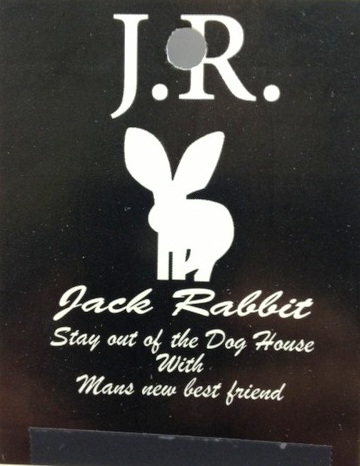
RECALLED – Jack Rabbit

August 12, 2013 – Product Recall – Jack Rabbit Inc. Conducts Voluntary Nationwide Recall of Lot 2510 of Jack Rabbit Dietary Supplement Due to undeclared ingredient.